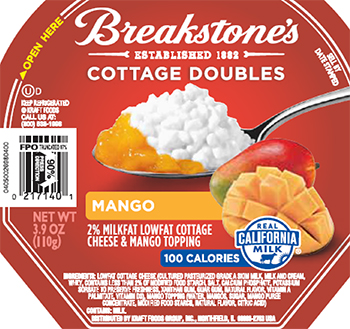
RECALLED – Cottage Cheese products

May 17, 2014 – Product Recall – Kraft Foods Group Voluntarily Recalls Select Cottage Cheese Products Due to Out-of-Standard Storage Temperatures
Certain Knudsen Cottage Cheese, Breakstone’s Cottage Cheese, Simply Kraft Cottage Cheese and Daily Chef Cottage Cheese Products Included in the Recall
.